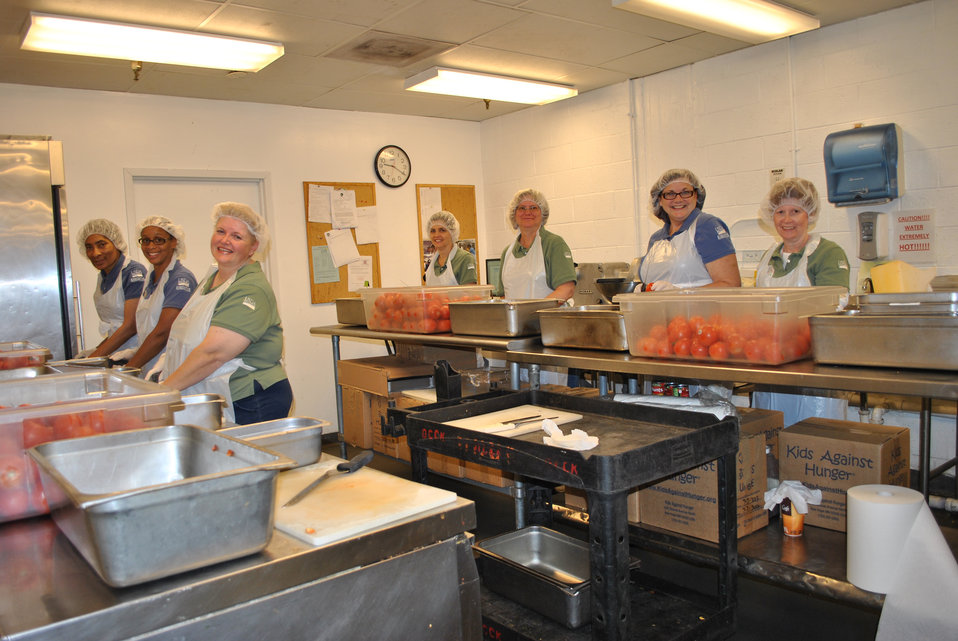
U.S. Department of Agriculture (USDA) volunteers work together to chop hundreds of pounds of tomatoes needed for bean burritos and Spanish rice dishes.